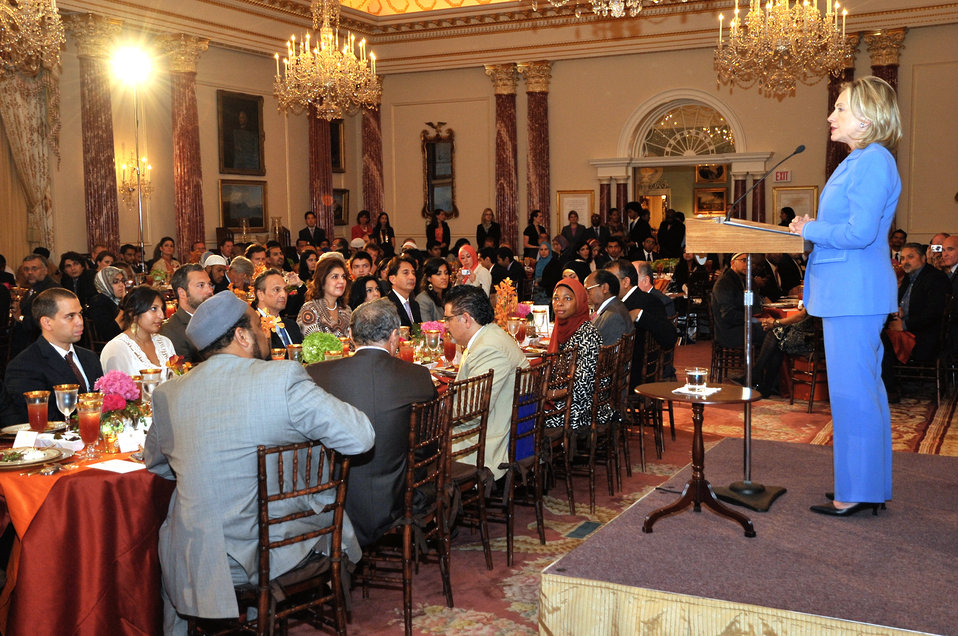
Secretary Clinton Delivers Remarks at Annual Iftar

U.S. Secretary of State Hillary Rodham Clinton delivers remarks at U.S. Department of State's annual iftar in Washington, D.C., on September 7, 2010.